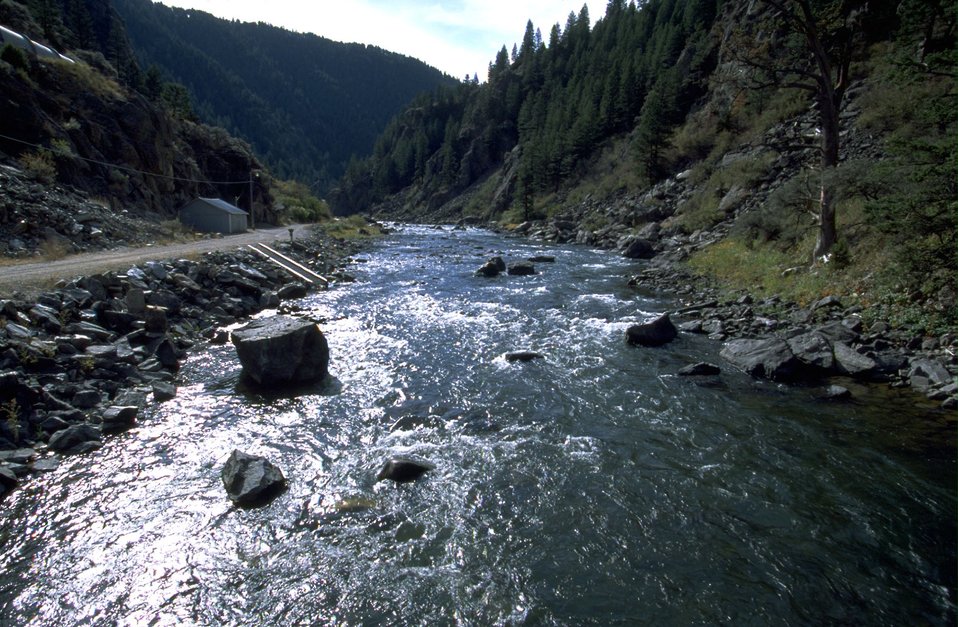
Boat Launch in Bear Trap Canyon